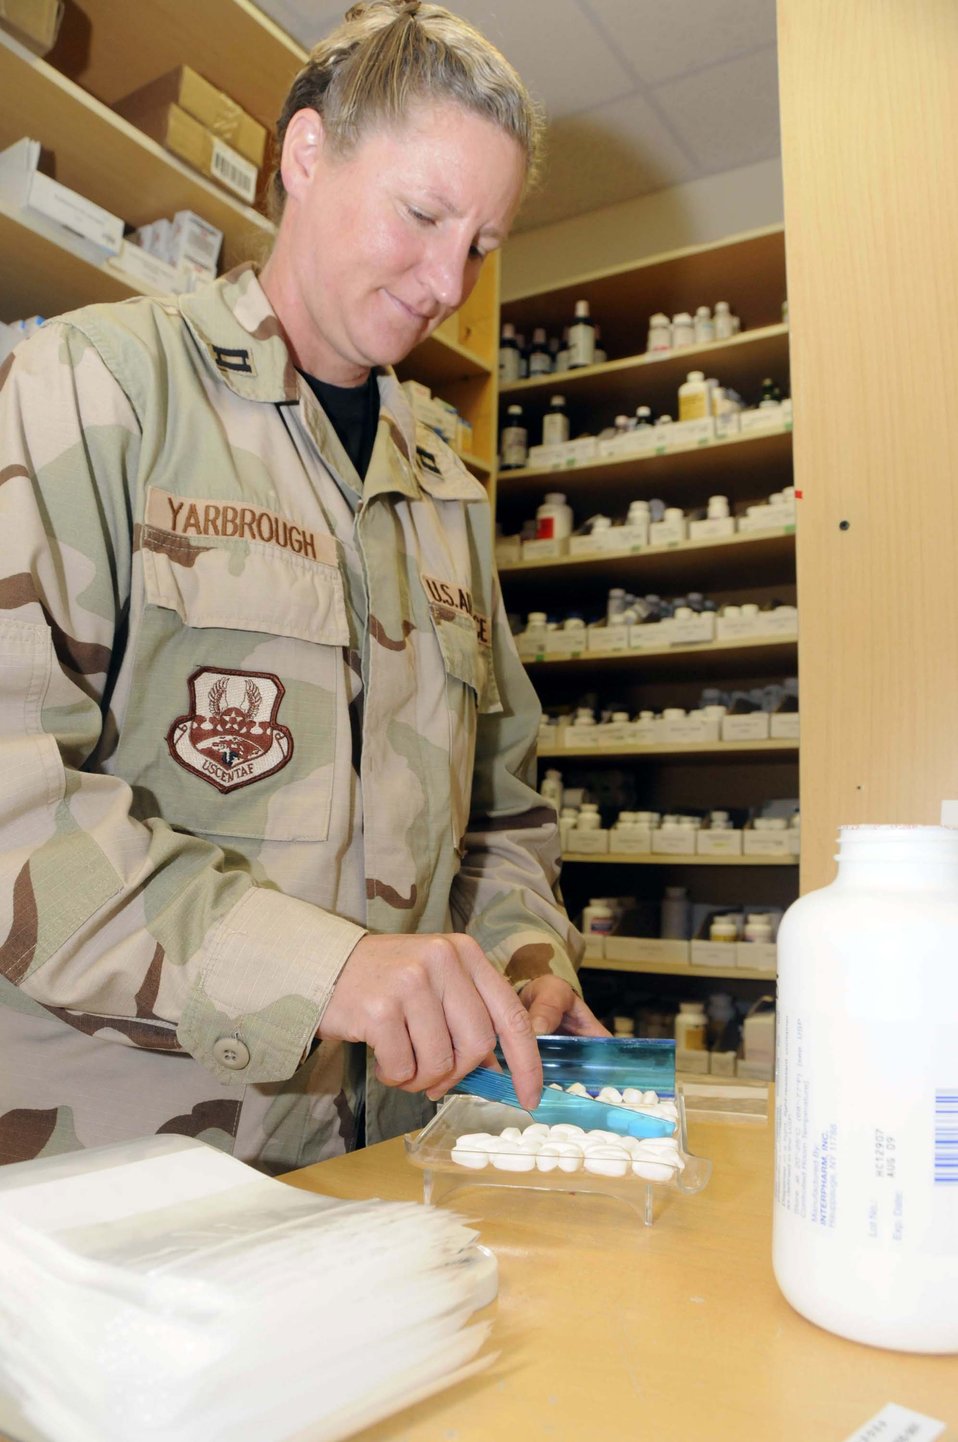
Medical group capitalizes on total force cohesion

Capt. Christine Yarbrough fills a prescription of ibuprofen in the 379th Expeditionary Medical Group's pharmacy Feb. 19 in Southwest Asia. Captain Yarbrough is an active duty member deployed from Nellis Air Force Base, Nev.